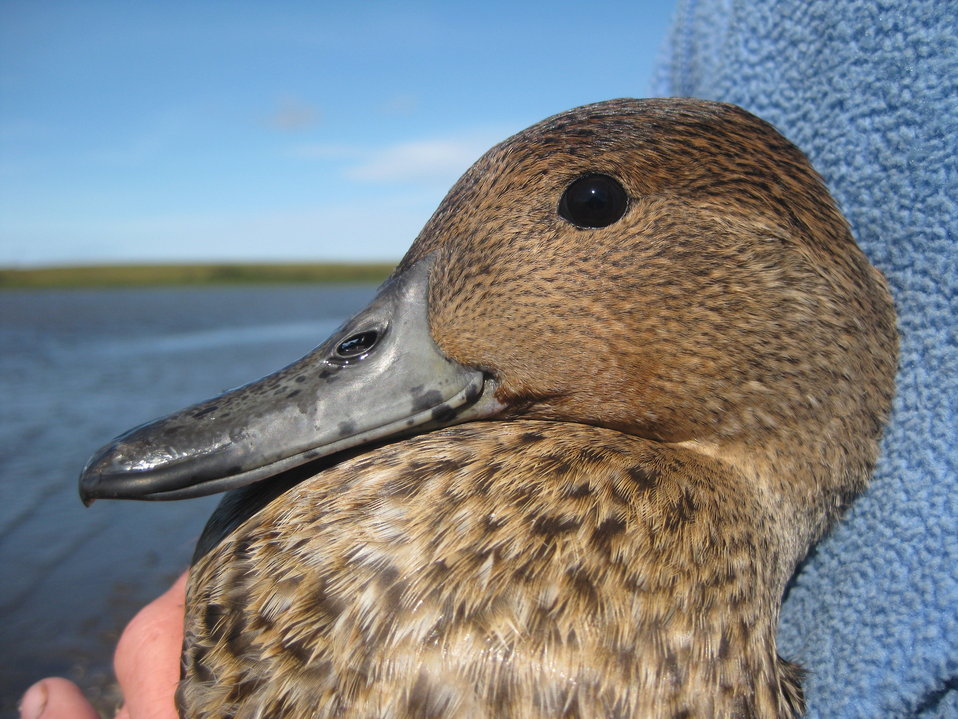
Adult Female Pintail

Banded adult female pintail that is ready to be released. Notice the dark speckles on the bill. This is a common on most adult females.

USFWS Yukon Delta NWR